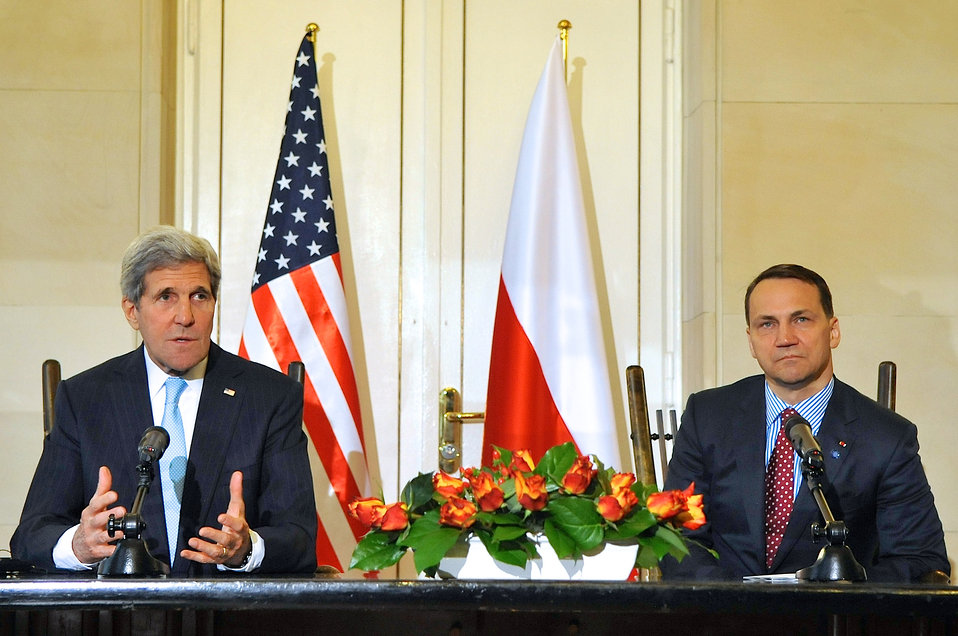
Secretary Kerry Speaks After Signing Innovation Agreement With Polish Foreign Minister Sikorski

U.S. Secretary of State John Kerry addresses reporters after he and Polish Foreign Minister Radislow Sikorski signed an Innovation Framework Agreement in advance of President Obama's visit to Warsaw on June 3, 2014.